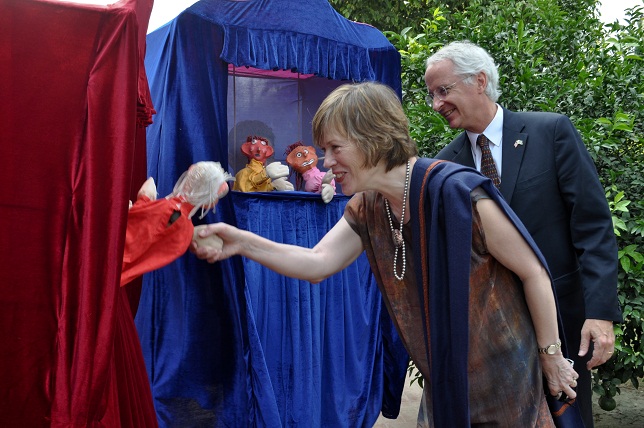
Pakistan Children Television (PCTV)

Lahore, October 5, 2011: U.S. Ambassador Cameron Munter standing with a puppet of a new USAID-sponsored Pakistani children’s TV show Sim Sim Hamara that will be launched later this year.

Sim Sim Hamara is a new Pakistani puppet show that has been designed under the USAID-funded four-year, $20-million Pakistan Children Television (PCTV) Project (puppet-based television programming) for Pakistani children. The show is scheduled to go on air in late December. This take-off on Sesame Street will provide joyful learning opportunities for children in the 4-9 year age group, with a focus on disadvantaged children, especially girls who do not have access to formal schooling. Educational curriculum will focus on language development, critical thinking, and cognitive processes. The program is expected to help alleviate the educational deficits of children without access to schooling and reflect messages of inclusion, mutual respect, and equal opportunity while developing basic literacy and numeracy skills.

In addition to the television show, the USAID-funded project will include: radio programs for parents and other caregivers, live puppet shows, mobile video shows, a website with e-books, games, and children’s songs.